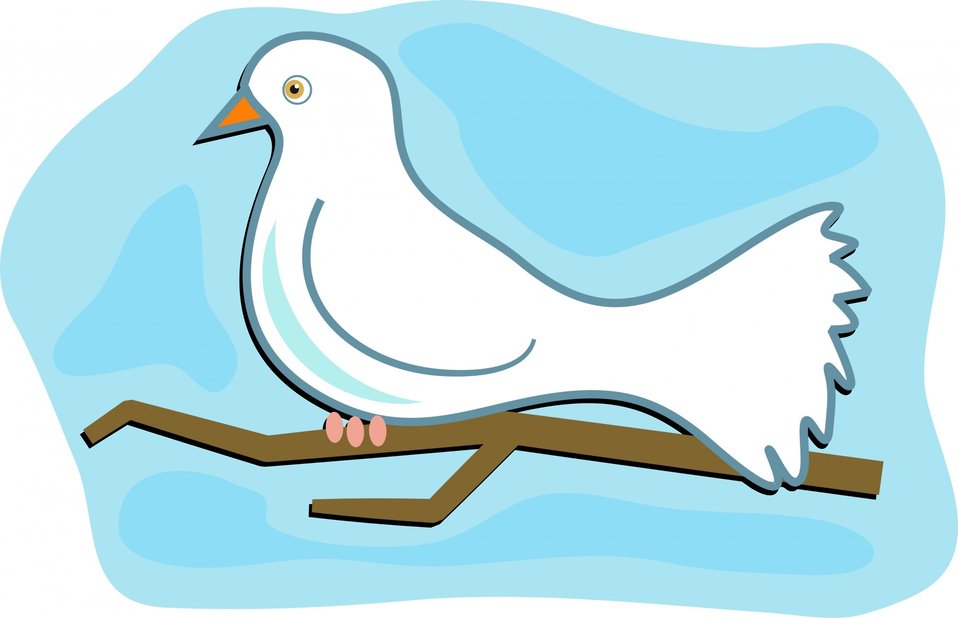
White dove clip art

Digital illustration of a white dove..